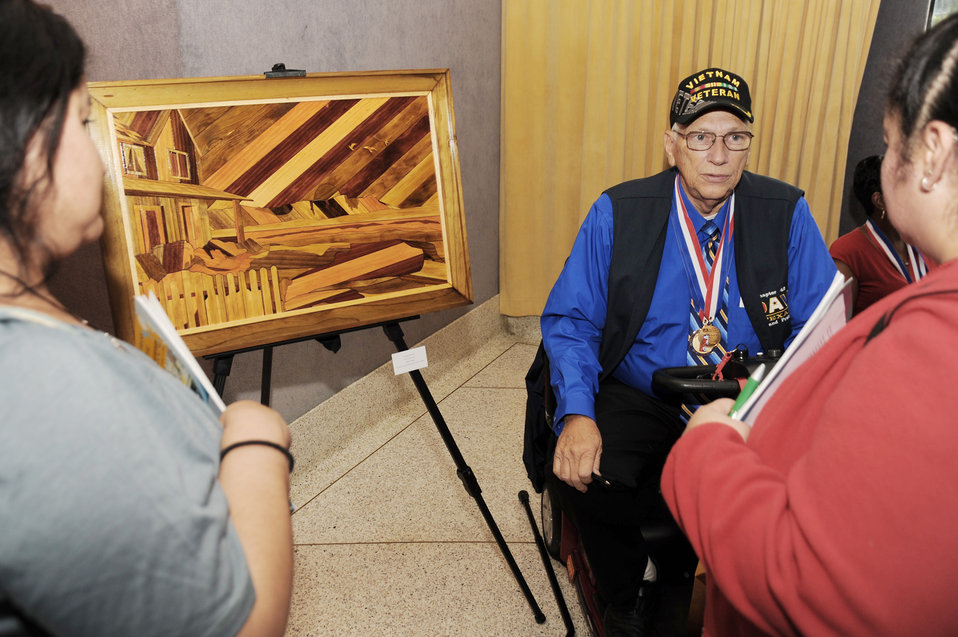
Veterans show true colors

Navy veteran Robert Elling explains his staining techniques to viewers as he sits beside his artwork during the 2009 National Veterans Creative Arts Festival Oct. 11, 2009, at the San Antonio Municipal Auditorium in San Antonio. Mr. Elling uses a staining technique he discovered accidentally when he inadvertently left a piece of steel wool in a jar of vinegar, enabling the vinegar to ?age? the wool.